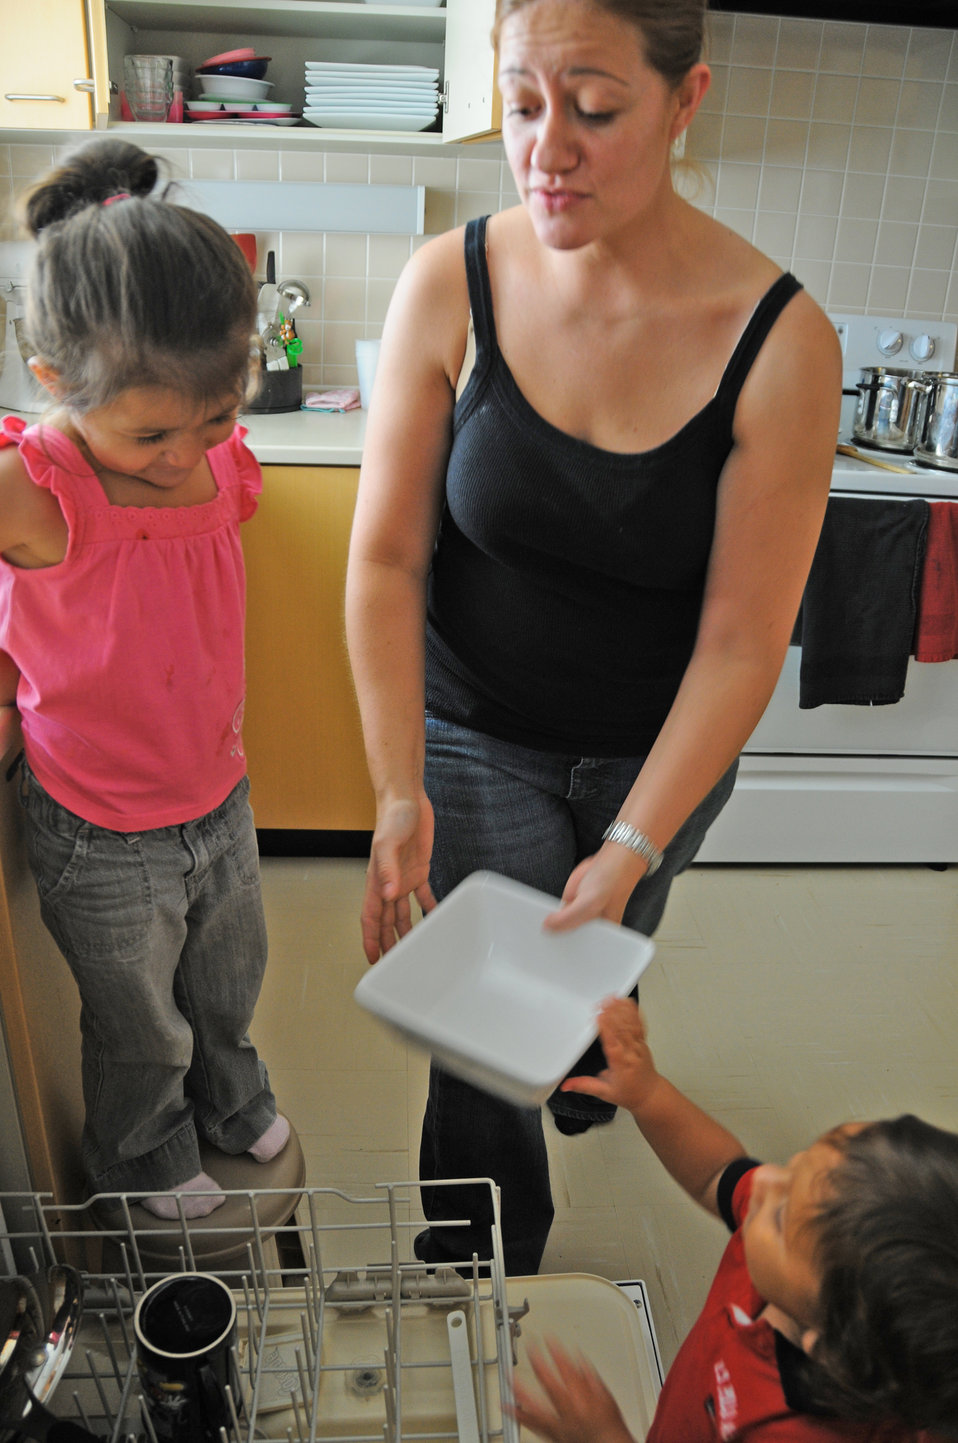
Momma wears combat boots

Staff Sgt. Christina Martinez makes doing the dishes an exercise in teamwork for her two children, Lilianna and Mateo, Sept. 14, 2009 at Kadena Air Base, Japan. Sergeant Martinez is a single mother and operations management contingency instructor with Det. 1, 554th Red Horse Civil Engineer Squadron,